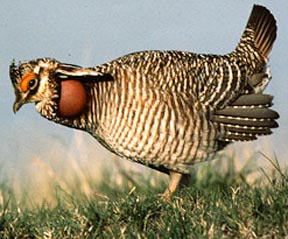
A Prairie-chicken.